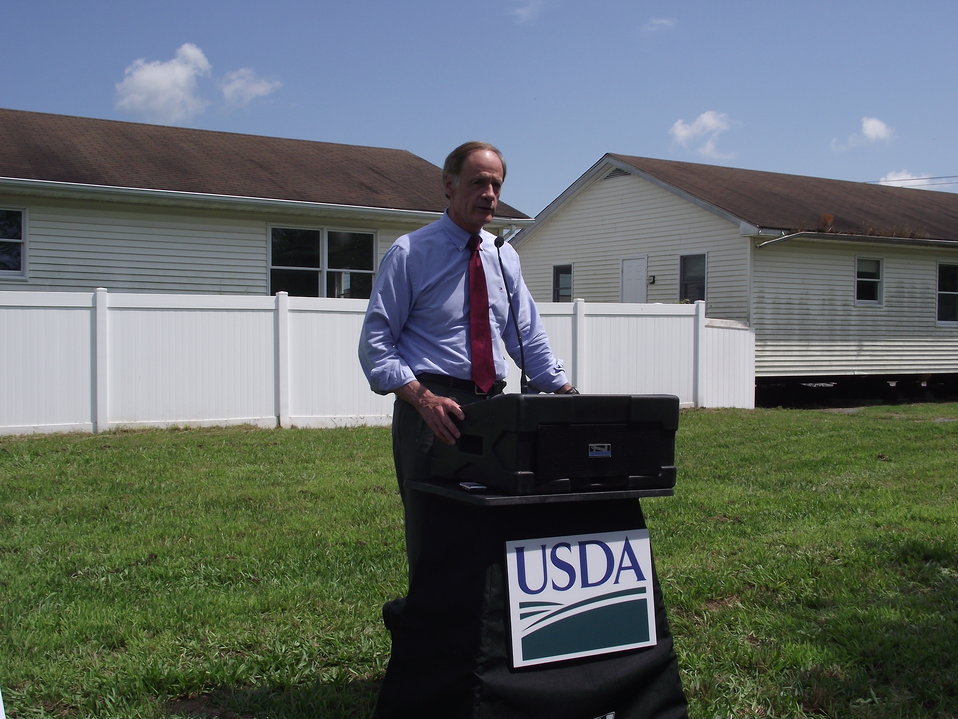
Senator Carper speaks at an event in Georgetown, Del., to highlight a USDA grant award that will help renovate the modular buildings behind him into a permanent home for Primeros Pasos (First Steps) early care and learning center.